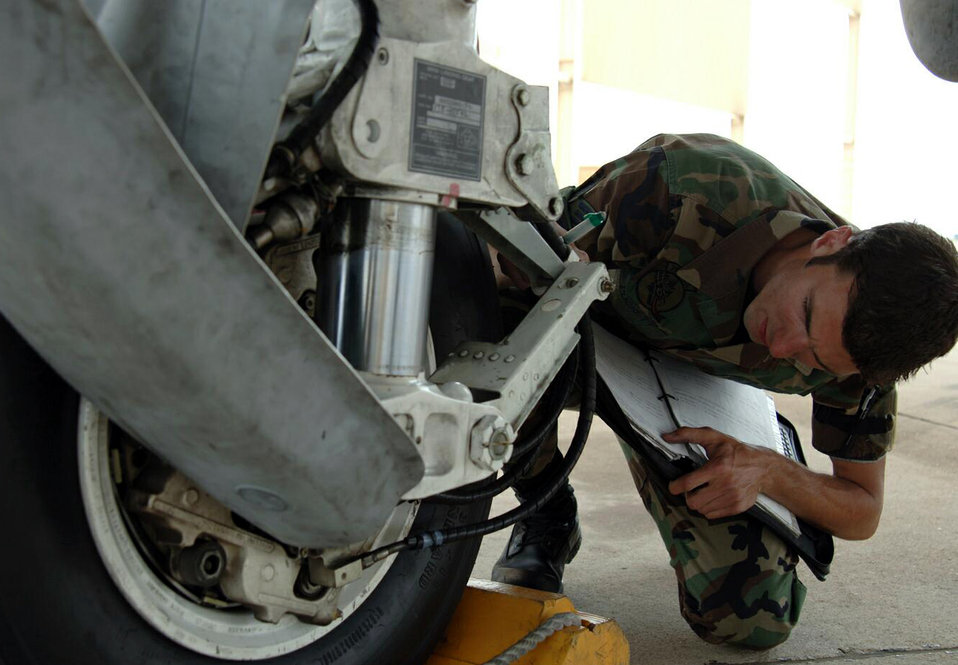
Analyze this

DAVIS-MONTHAN AIR FORCE BASE, Ariz. -- Staff Sgt. Thomas Puckett inspects an A-10 Thunderbolt II for a cost and analysis report on a recent aircraft mishap here. He is a crew chief assigned to the 355th Aircraft Maintenance Squadron.